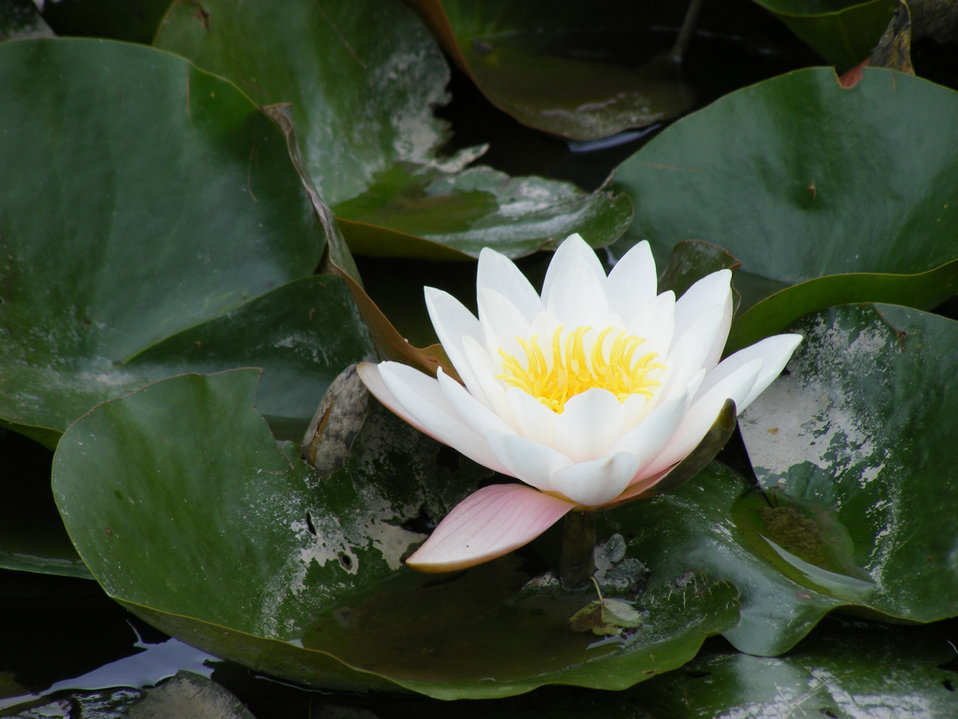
Water lily on a pond.